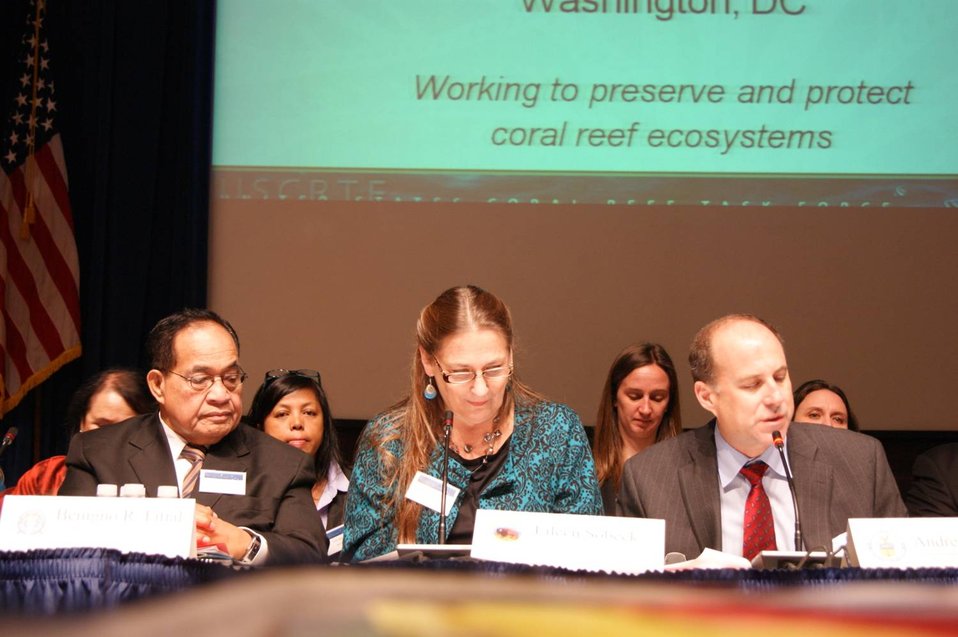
Coral Reef Task Force - Winter Meeting 2012